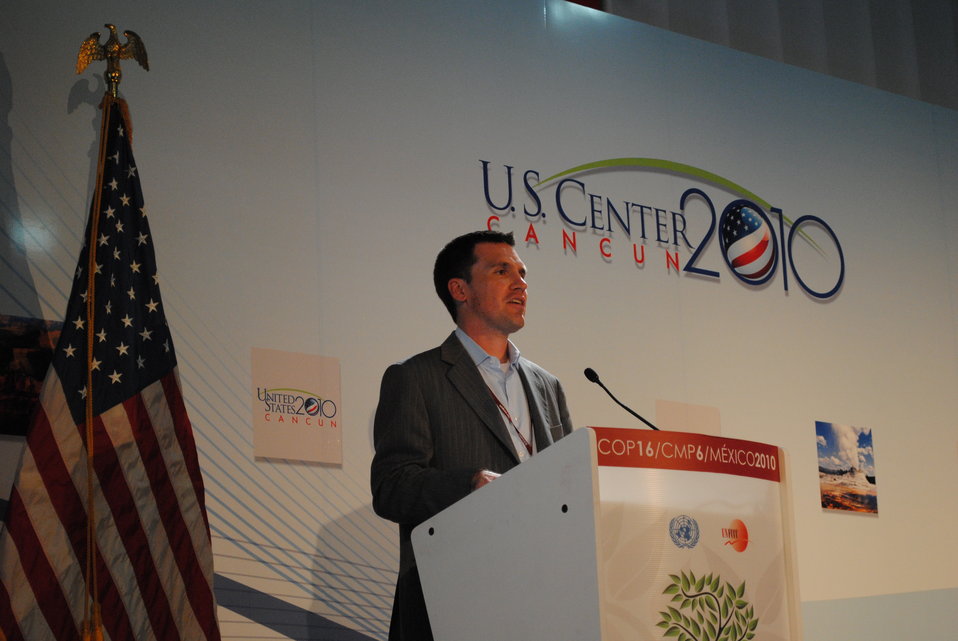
Leif Hockstad Addresses the U.S. Center

Leif Hockstad of the EPA addresses the U.S. Center at COP-16 in Cancun, Mexico, on December 7, 2010.